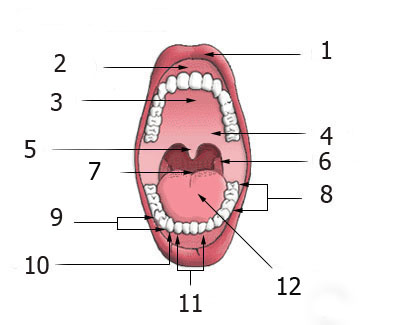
oral cavity with numbered annotations (for non-english wikipedias) Русский: Ротовая полость человека: 1. Верхняя губа (лат. Labium superius)
2. Десна (лат. Gingiva)
3. Твёрдое нёбо (лат. Palatum durum)
4. Мягкое нёбо (лат. Palatum molle)
5. Язычок (лат. Uvula palatina)
6. Нёбная миндалина (лат. Tonsilla palatina)
7. Перешеек зева (лат. Isthmus faucium)
8. Большие коренные зубы (лат. Dentates molares)
9. Малые коренные зубы (лат. Dentates premolares)
10. Клык(и) (лат. Dentes canini)
11. Резцы (лат. Dentes incisivi)
12. Язык (лат. Lingua)